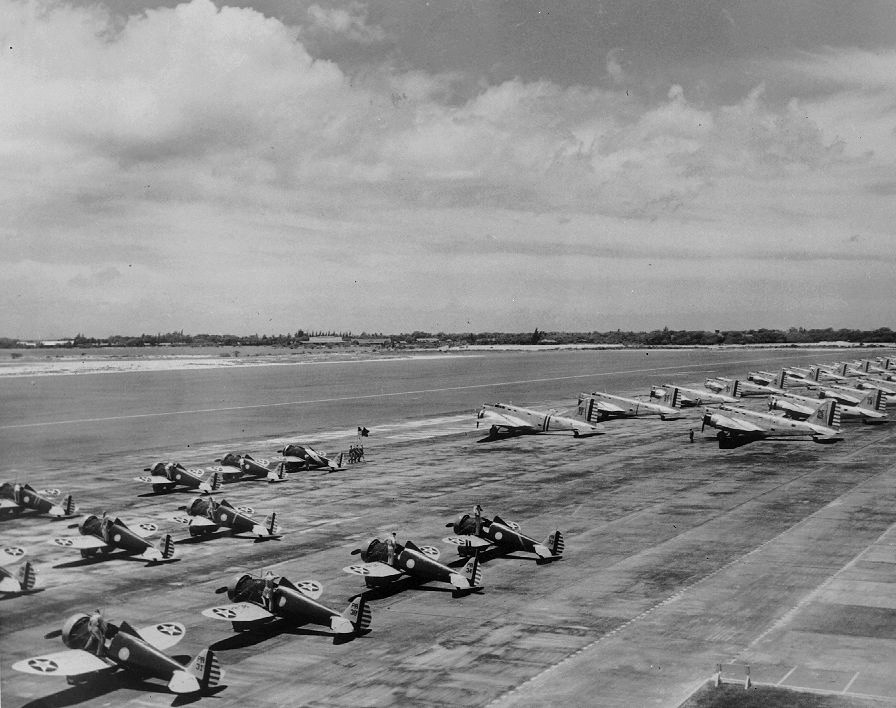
P-26s and B-18s

Boeing P-26s and Douglas B-18s were parked on the ramp at Hickam Field, Hawaii, in January, 1940.